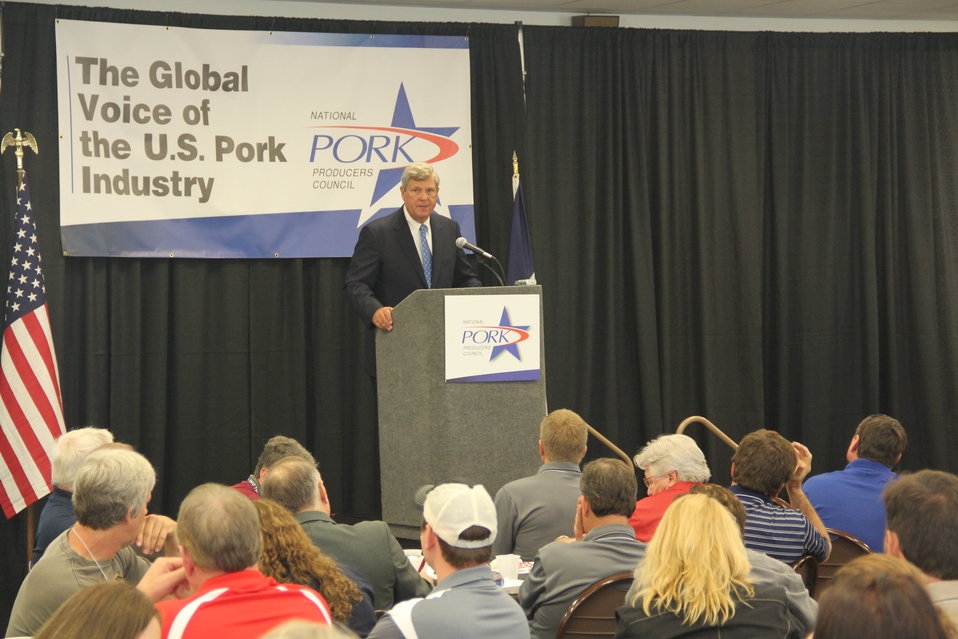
Agriculture Secretary Tom Vilsack delivers remarks at World Pork Expo in Des Moines, IA on Jun. 5, 2014.